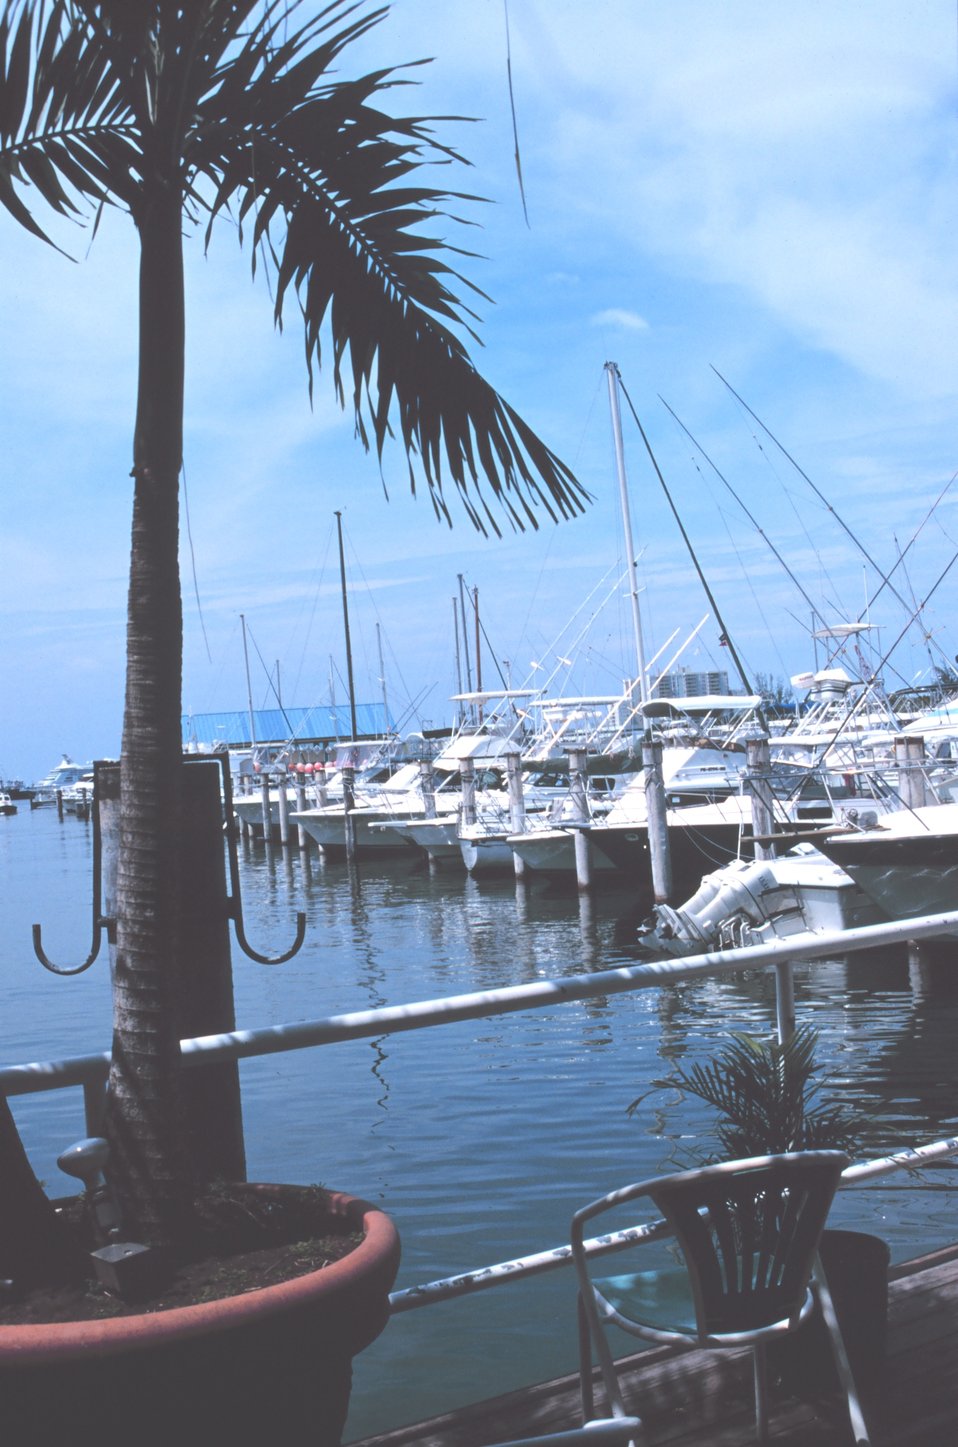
Recreational fishing boats at San Juan Bay Marina